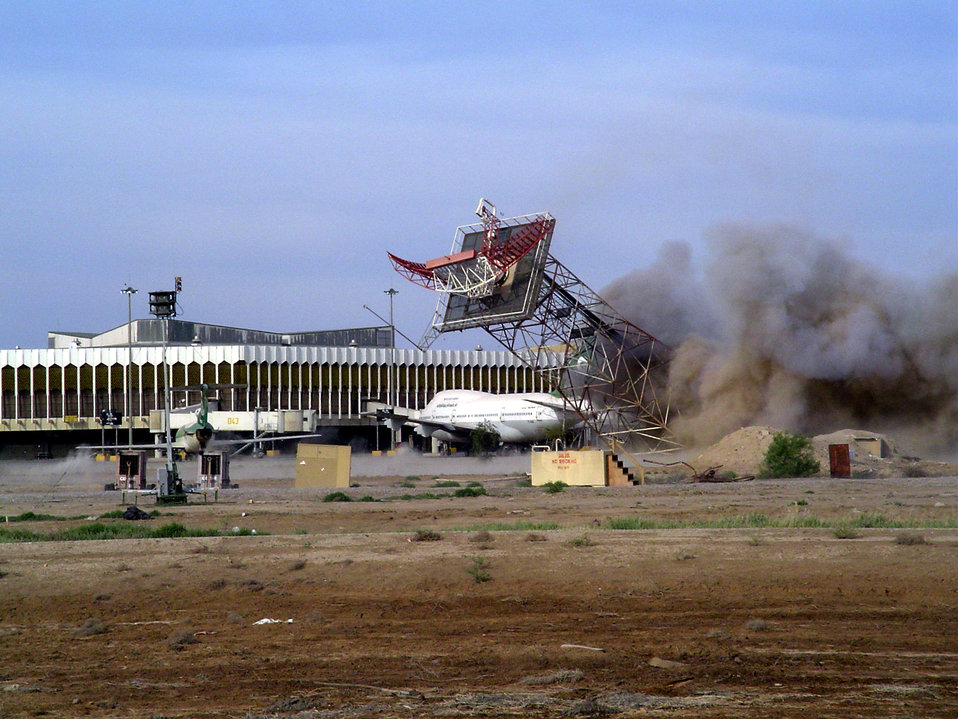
Demolition man

BAGHDAD, Iraq -- An obsolete radar tower at Baghdad International Airport was demolished recently. The demolition makes room for a new radar tower to bring the airport up to international standards. A deserted Iraqi Airways 747 jumbo jet with its engines removed sits in the background.